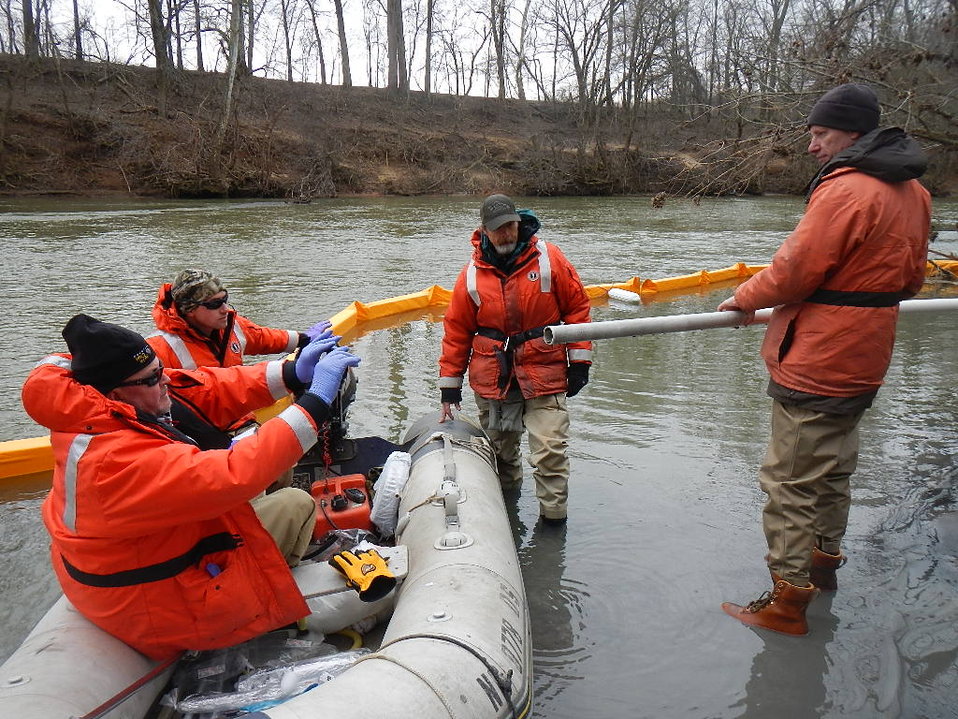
Responders take core sample as ta

Tom Augspurger (r), USFWS, taking core sample during February 8th reconnaissance of Dan River coal ash spill. (l-r) Rick Smith, Duke Energy, Matt Schaefer, Duke Energy, John Fridell, USFWS Tom AUgsperger, USFWS.